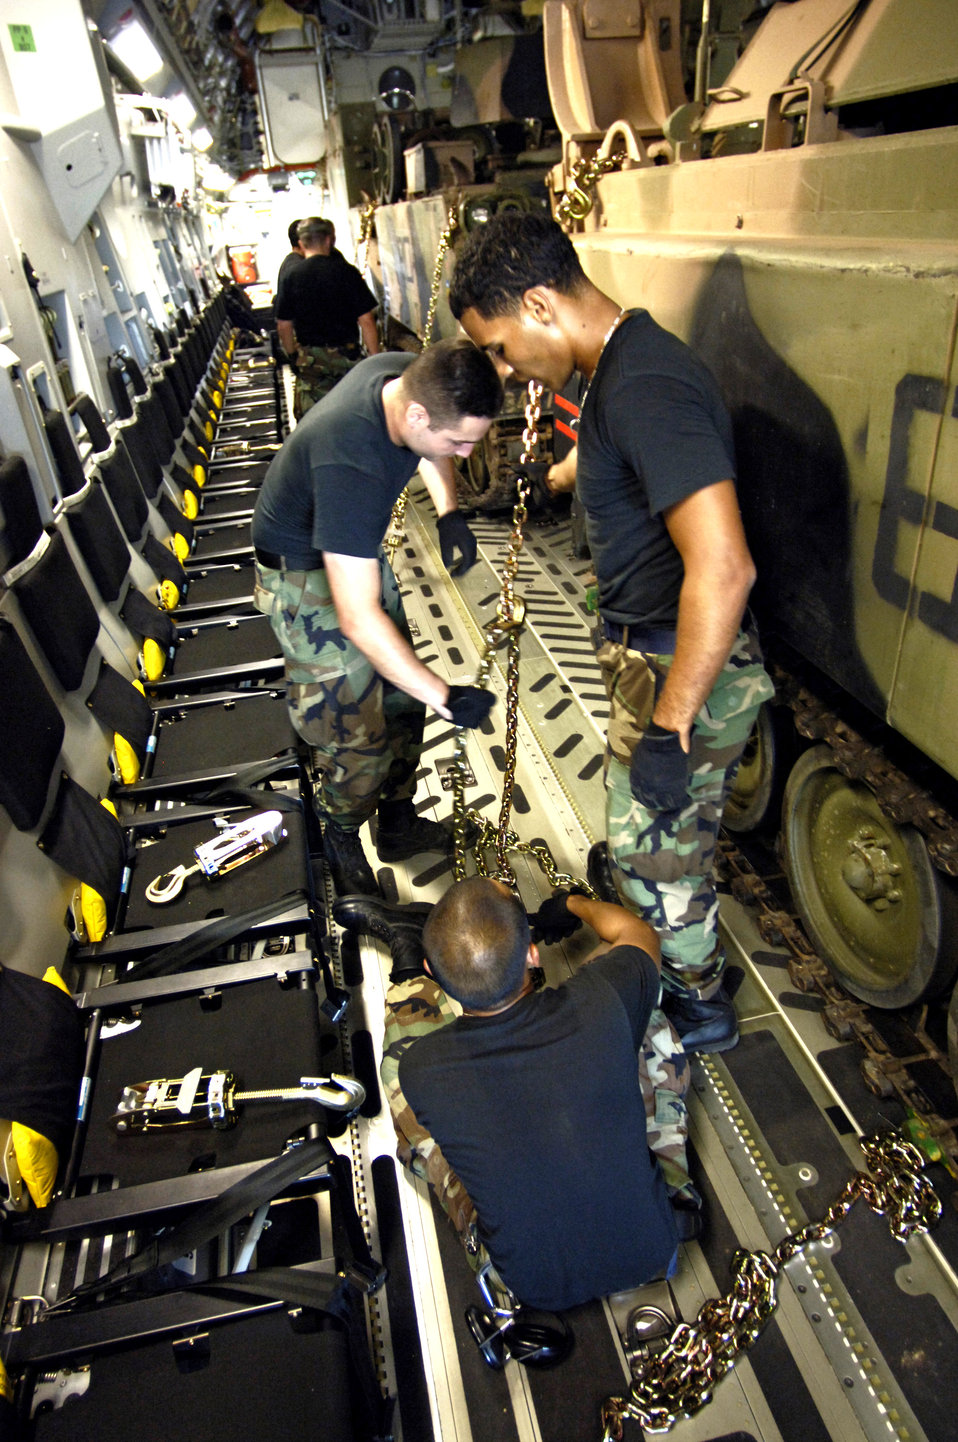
Combat Mobility Element moves cargo quickly, safely

Airmen from the Combat Mobility Element, or CME, secure an armored personnel carrier on a C-17 Globemaster III at Royal Australian Air Force Base Townsville, Australia, on Tuesday, May 30, 2006 The CME is part of the 15th Logistical Readiness Squadron at Hickam Air Force Base, Hawaii. The CME is in Townsville to help prepare and load equipment on C-17s from Hickam that are repositioning Australian Defense Forces to better support peace operations in East Timor.